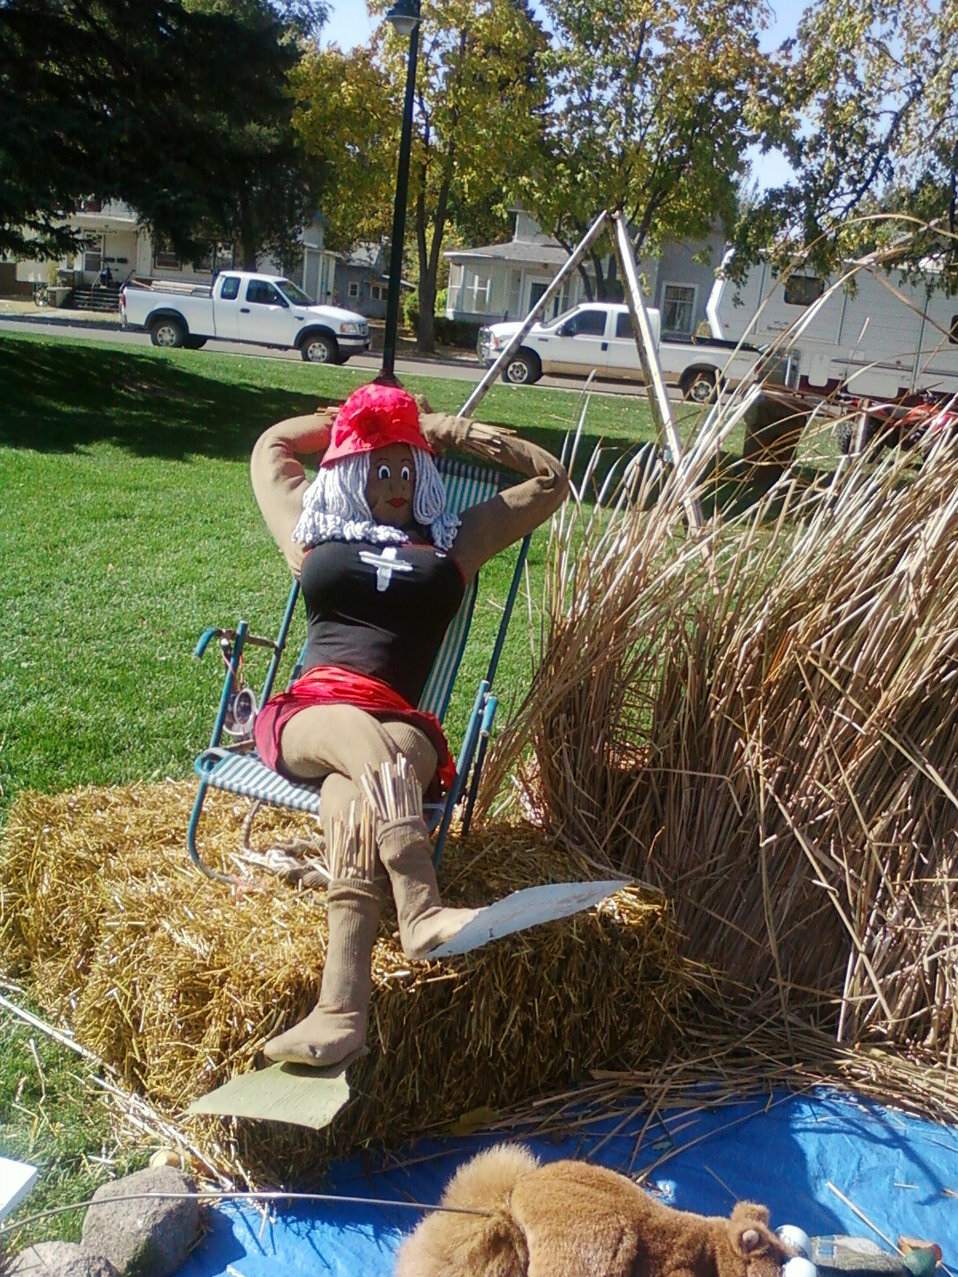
2011 Scarecrow Contest Huron, SD